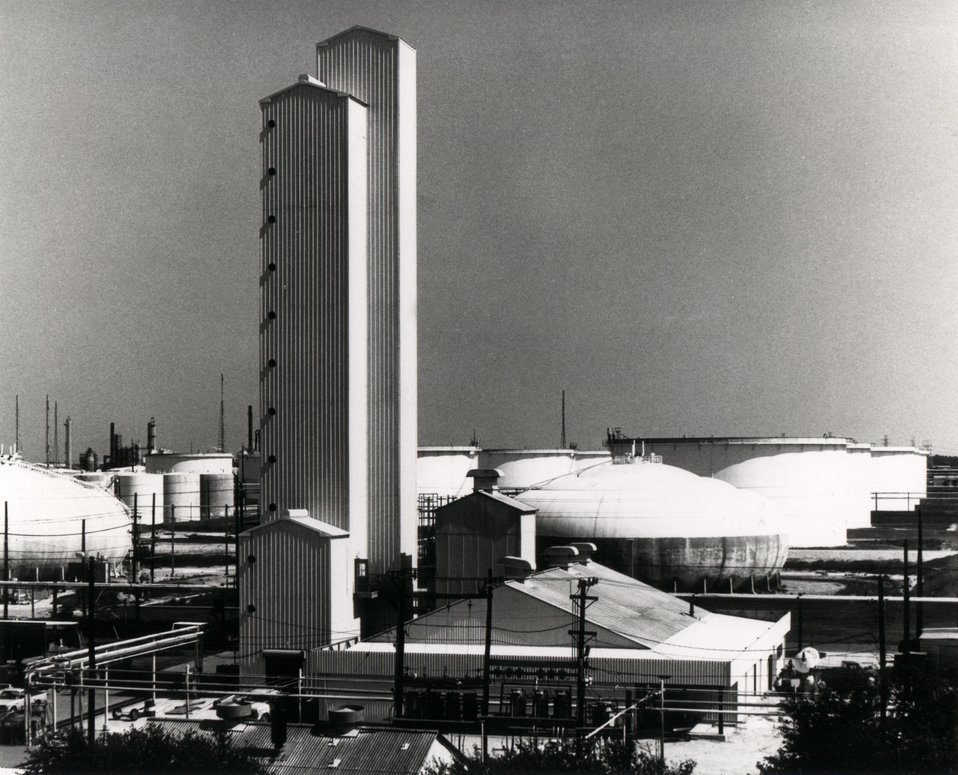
Overall view of the Catalytic Coal Gasification process development unit under construction for the production of substitute natural gas. c.1970